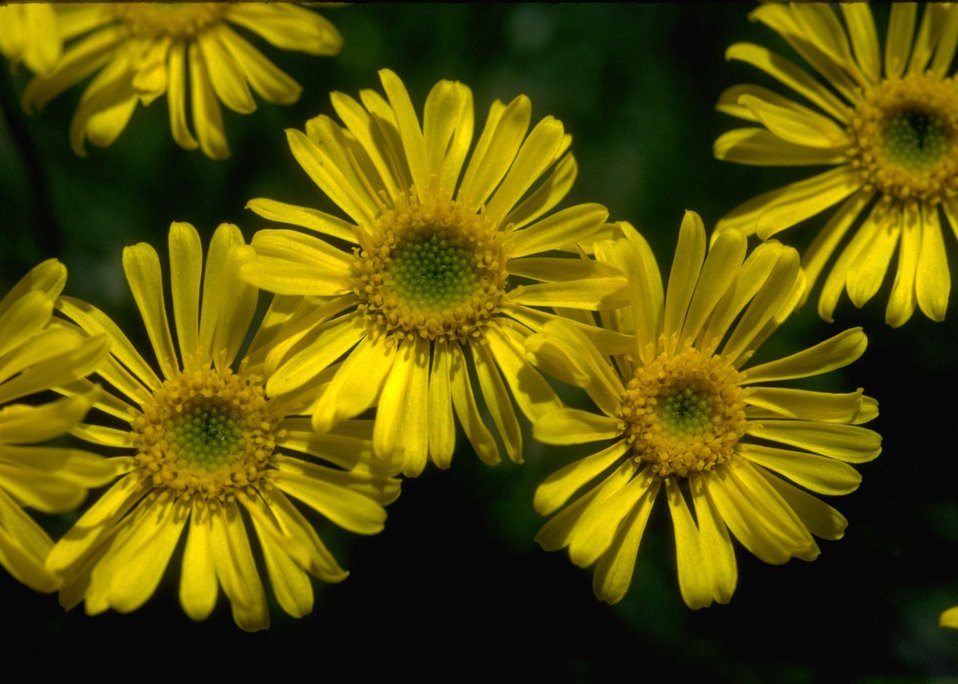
Linear-leafed Daisy found on the Sheephead Mountains in Harney County, Oregon. The botanical name is Erigeron linearis.